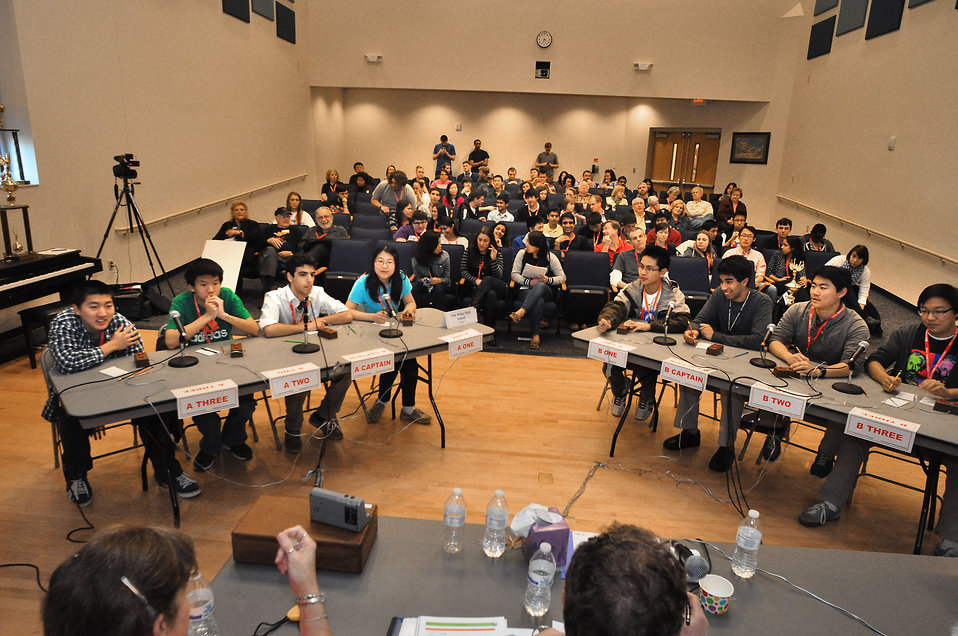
Oak Ridge HS and Farragut HS 2014 TN DOE Science Bowl

DOE photo Lynn Freeny 2-22-2014 Pellissippi State Blount Campus